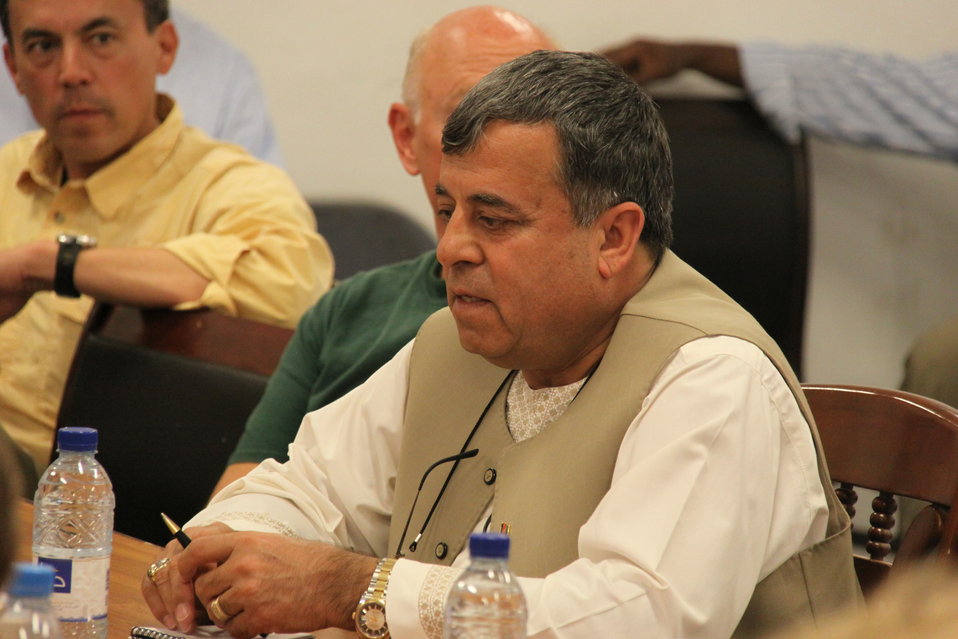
Meeting with Local Leaders in Kandahar